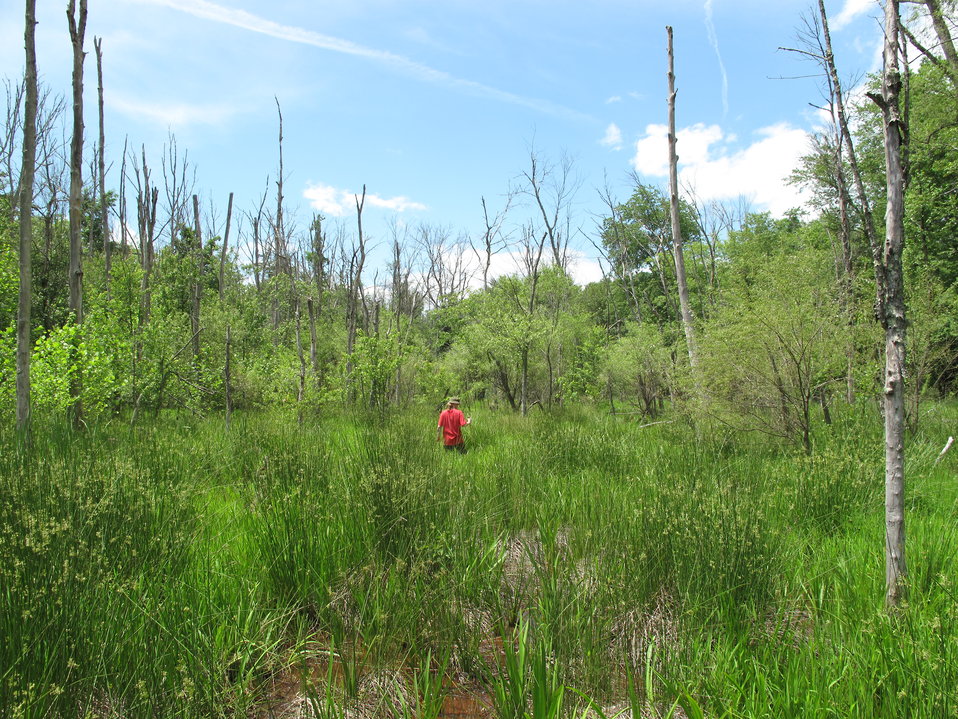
Bog turtle habitat

An example of bog turtle habitat – open
canopy, unpolluted, herbaceous sedge
meadows and fens.